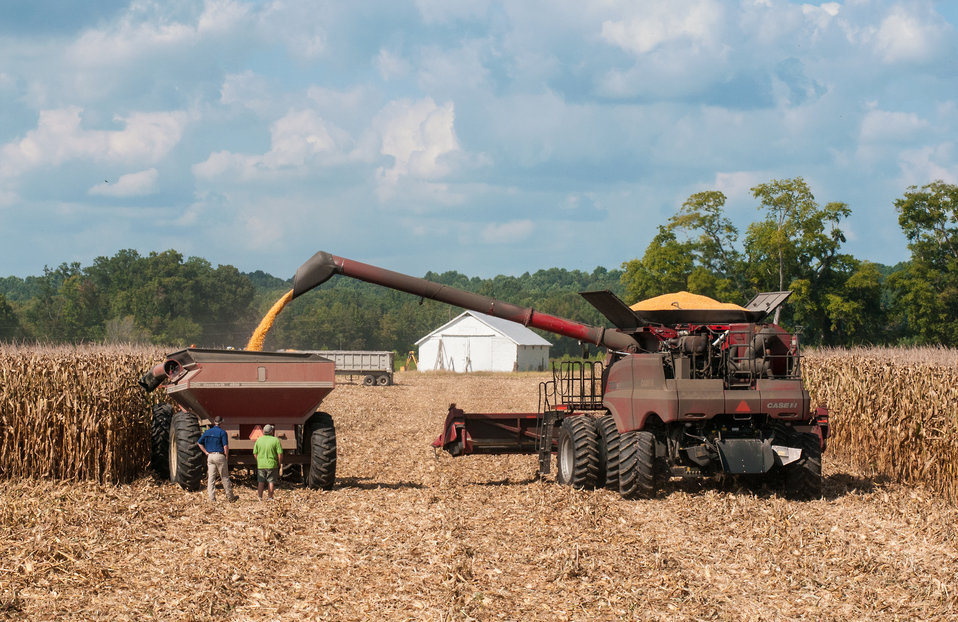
A 12-row corn harvester corn harvester cuts corn from which the kernels and cornstalks separated during the harvest on Friday, Sept. 20, 2013 harvest, at the John N. Mills & Sons farm; a family owned business located in the Hanover and King William Counties of Virginia. Pleasant Level Farm was the original farm and a Land Grant from King George III of England to Nicholas Mills in 1725. The original acreage has never left the Mills family name and continues to be farmed by the family. Now the farm covers 5,744 acres that produce corn, wheat, soybeans, barley, hay and timber, and pastures a large herd of beef cattle. They have been using conservation and stewardship practices since the 1960s. Some of the efficient practices include no-till planting methods and cover crops to reduce soil erosion and prevent the leaching of nutrients into ground water, as well as livestock stream exclusion. The farm has several conservation easements that aids in the preservation and restoration of wetlands and waterways. For information about the U.S. Department of Agriculture (USDA), please go to www.usda.gov.